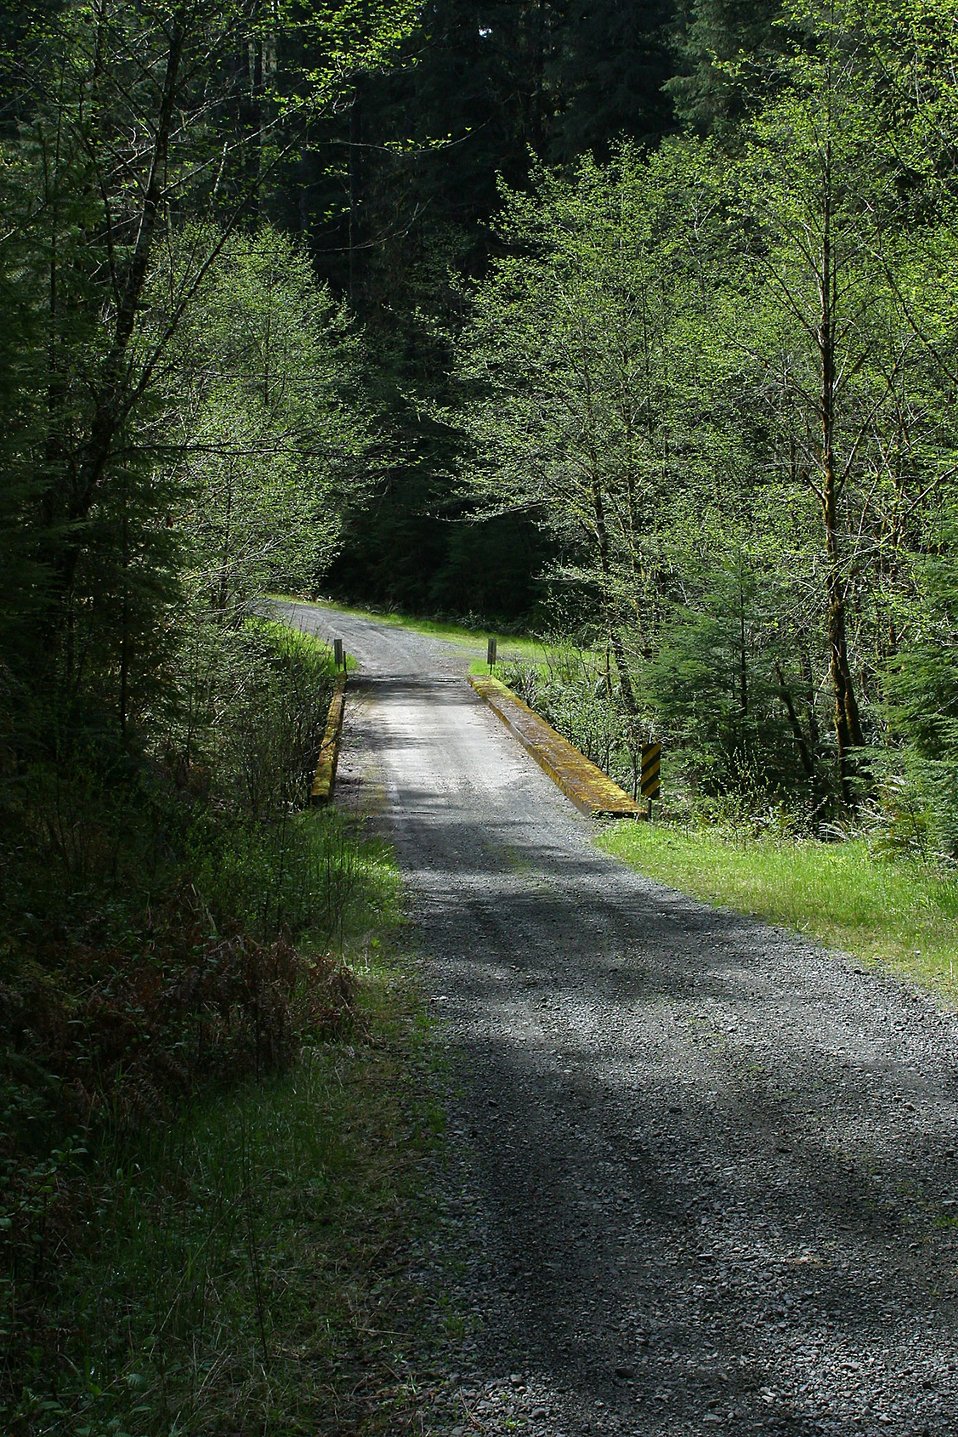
Lyons Bridge on the Little N. Fork Santiam River where thieves removed aluminum guardrail.